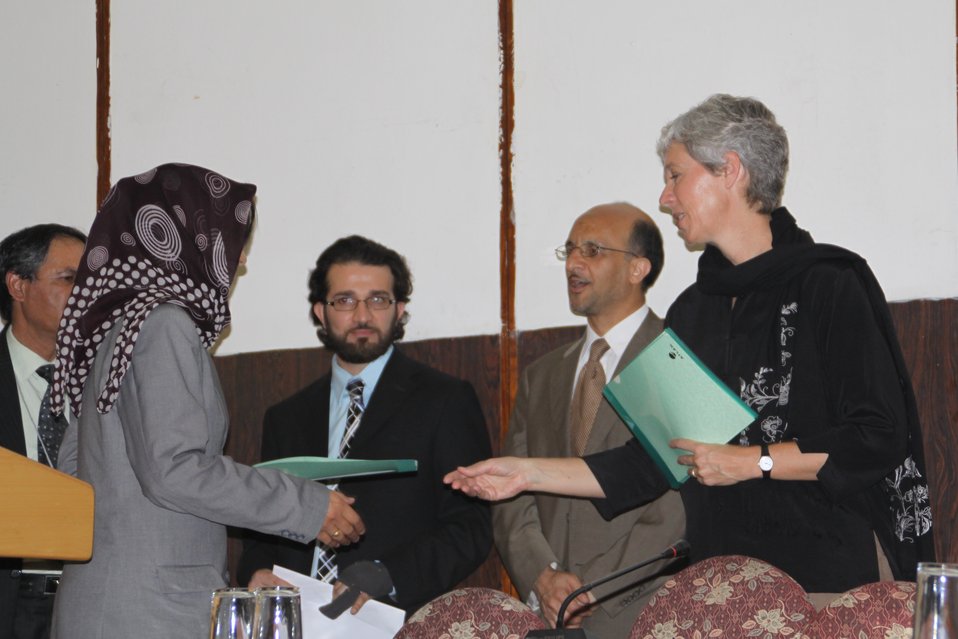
Science and Math Educators Association Conference Held in Kabul